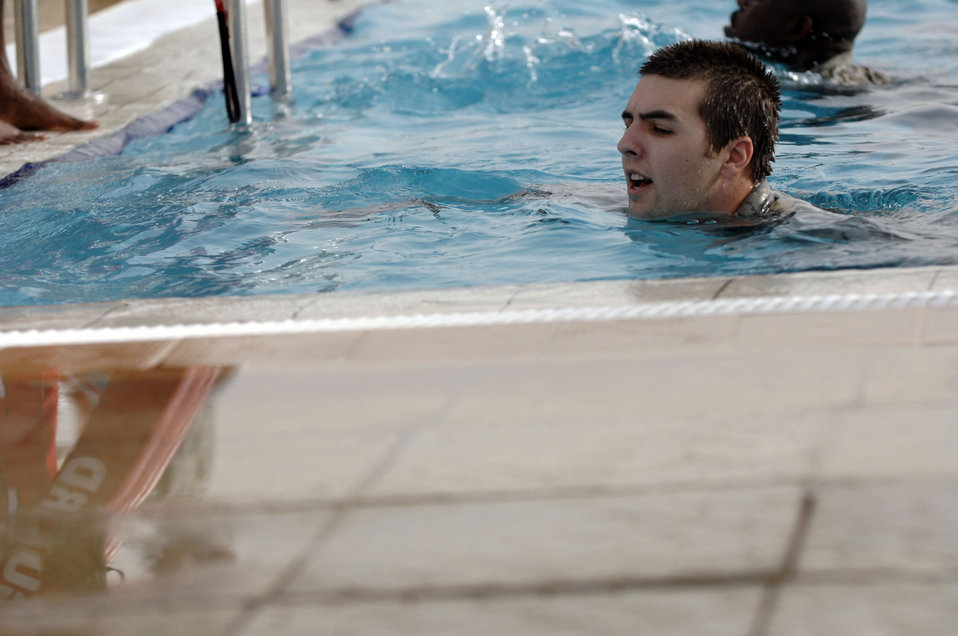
All Wet

Senior Airman Justin Bavery treads water to ensure proficiency in watery terrains here July 8. Airman Bavery is a 332nd Expeditionary Civil Engineer Squadron explosive ordnance disposal technician at Joint Base Balad, Iraq.